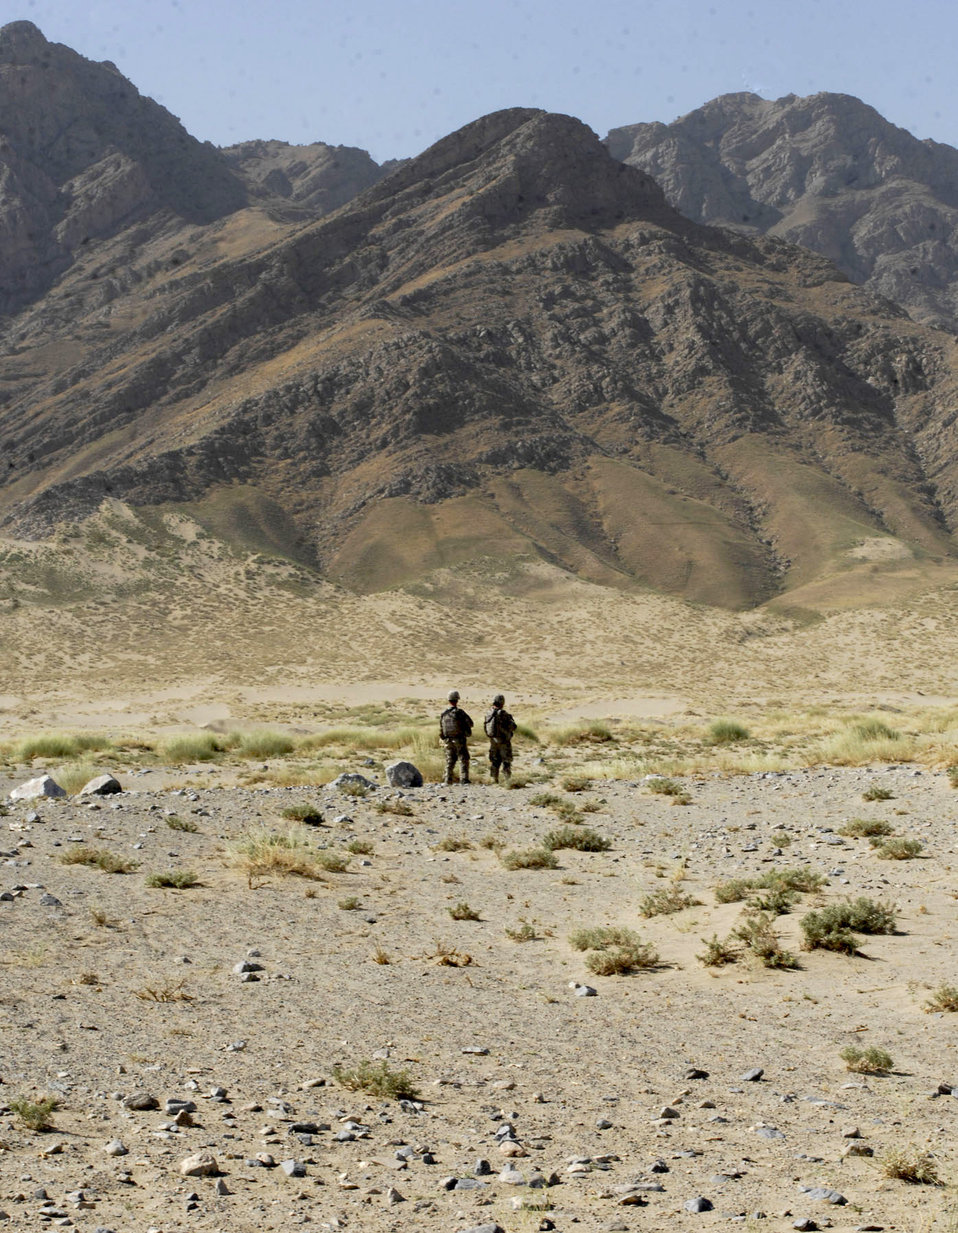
Bagram Airmen destroy explosives, munitions

Against the backdrop of mountains in Afghanistan, two soldiers from Combined Joint Task Force-82 provide security for the 755th Air Expeditionary Group's Explosive Ordnance Disposal flight at Bagram Airfield, Afghanistan. The EOD technicians disposed of several hundred pounds of explosives, including discarded Soviet munitions from the 1970s.